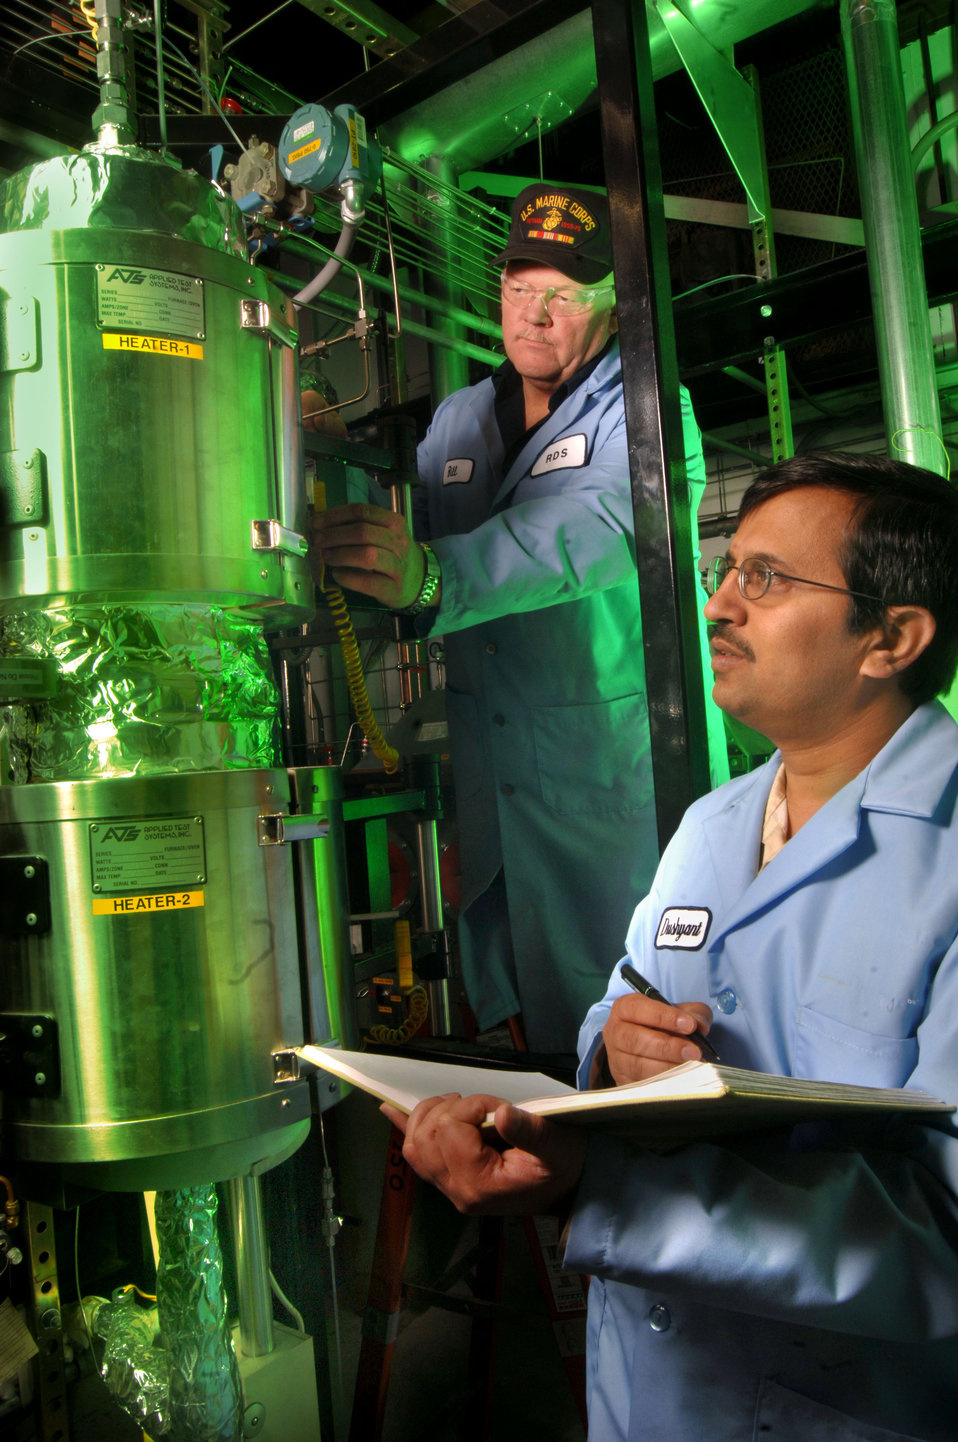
Dushyant Shekhawat of the Office of Research and Development at the DOE's NETL and Bill Grimes of Parsons are preparing the catalyst screening unit (CSU) located in NETL's Reactor Laboratory for Diesel Reforming runs.

DOE is sponsoring development of high-temperature fuel cell power systems on solid oxide technology through it Solid State Energy Conversion Alliance (SECA) program. The program is geared at mass manufacturing of fuel cells for high volume markets and multiple applications.